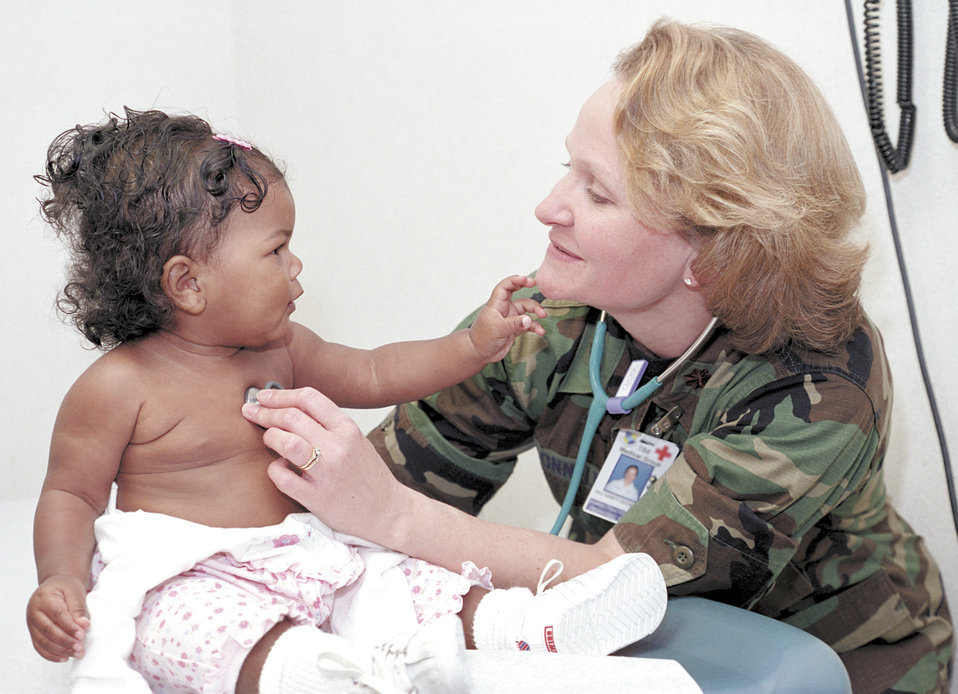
Hello there

TINKER AIR FORCE BASE, Okla. -- Karisa Washington carefully studies Maj. Nancy O'Connell's face during the 10-month-old's exam in the pediatric clinic here. Clinic workers provide health-care services for about 3,000 of the youngest members of military families through well-baby appointments, vaccinations and physicals. Major O'Connell, a reservist, is a certified pediatric nurse practitioner at the 72nd Medical Group.